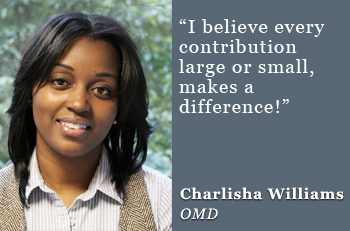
Charlisha Williams

'I give because I believe every contribution large or small, makes a difference!'